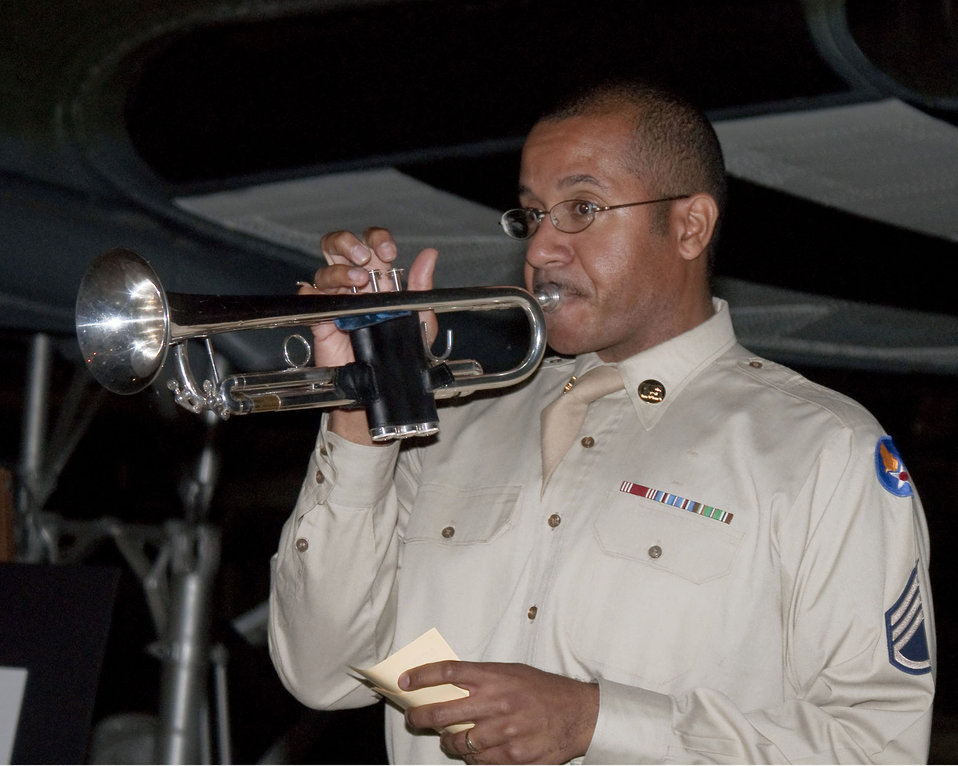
Huge crowd turns out for Night at the Air Force Museum

A Glenn Miller band member plays his trumpet during Night at the Air Force Museum on May 15 at the National Museum of the U.S. Air Force at Dayton, Ohio.